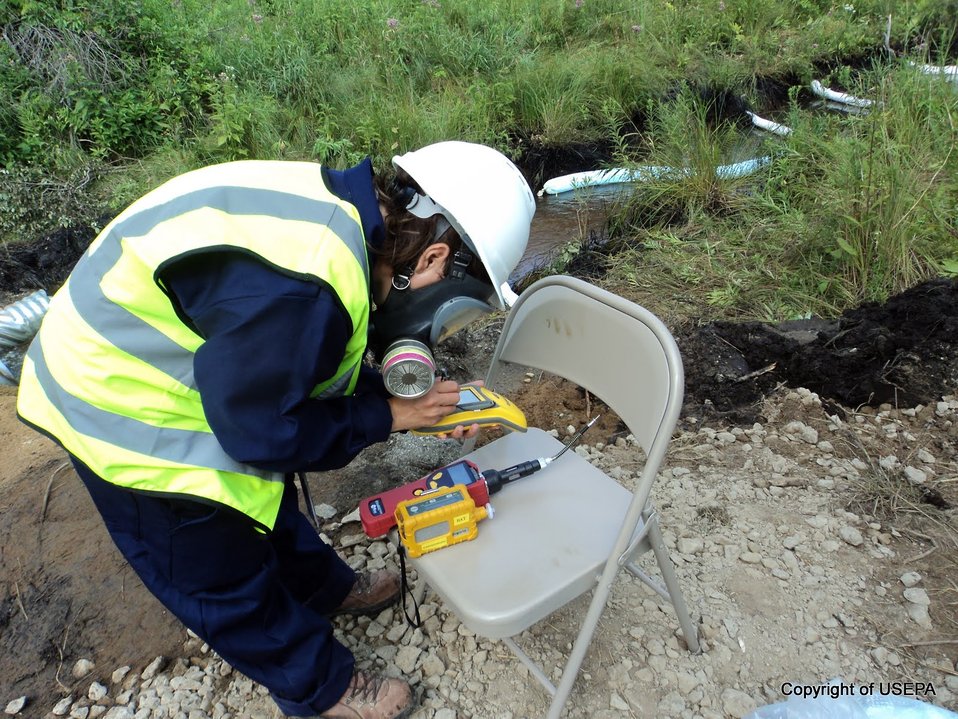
Air monitoring readings being taken within 500 yards of the oil spill and waterways.